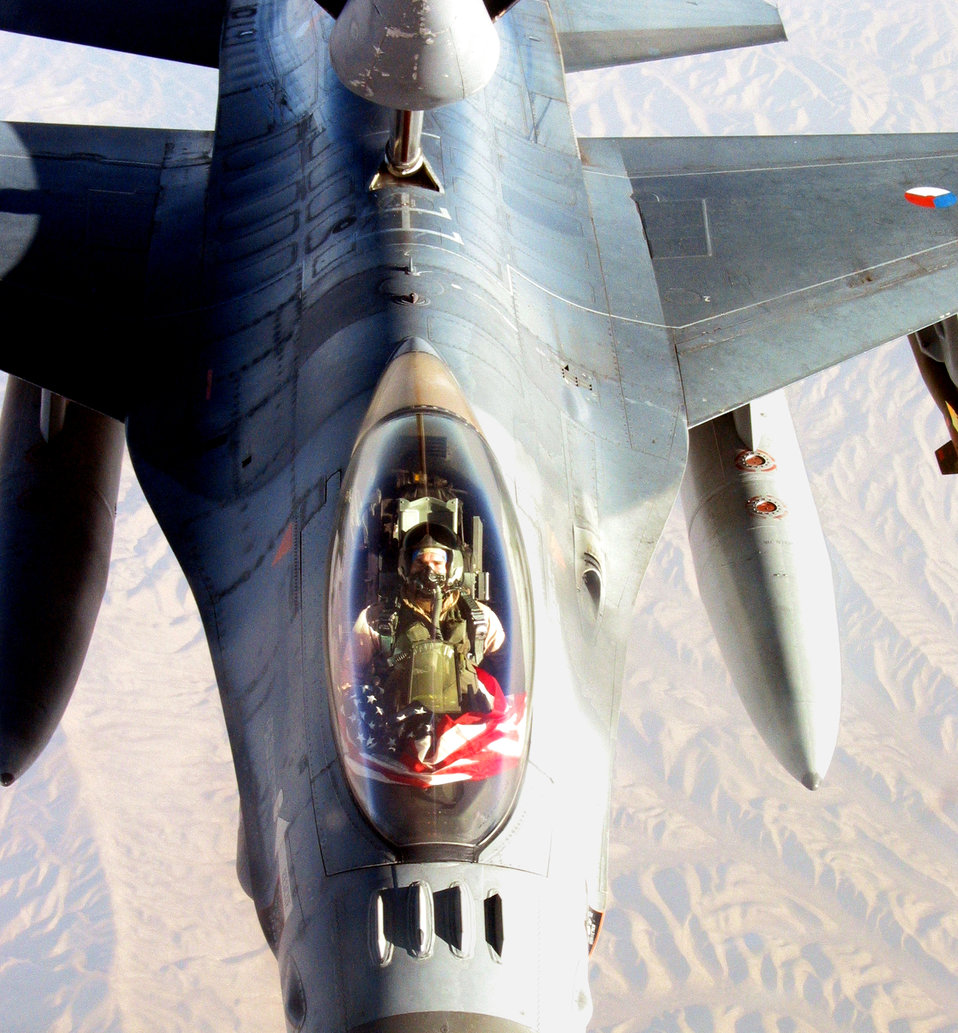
Flying colors

GANCI AIR BASE, Kyrgyzstan -- Maj. Beau Rogers displays an American flag from his Dutch F-16 while refueling over Afghanistan on Sept. 11. Rogers is an exchange pilot serving with the Royal Netherlands air force. He joins Dutch pilots to provide fighter support to ground forces in Afghanistan supporting Operation Enduring Freedom.